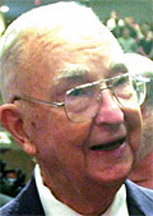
Former Doolittle Raider passes away

Former Lt. Nolan A. Herndon, a member of the famed Doolittle Raiders, died of pneumonia Oct. 8 at the age of 88. The lieutenant was a navigator-bombardier on one of the B-25 bombers that took off from an aircraft carrier on April 18, 1942, to strike targets in Japan.